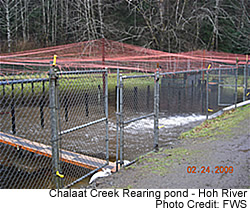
Chalaat Creek - Quinault National Fish Hatchery

The Quinault National Fish Hatchery is located in the Quinault Rain Forest on the Quinault Indian Reservation, approximately 45 miles north of Aberdeen, Washington. Four fish species are reared in this hatchery.